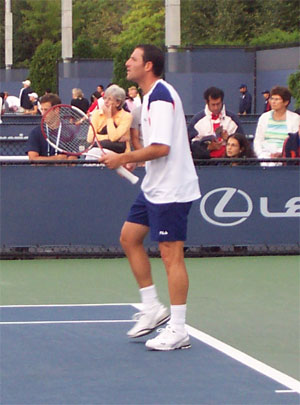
Self Made picture of Jonathan Erlich playing at the 2006 U.S. Open